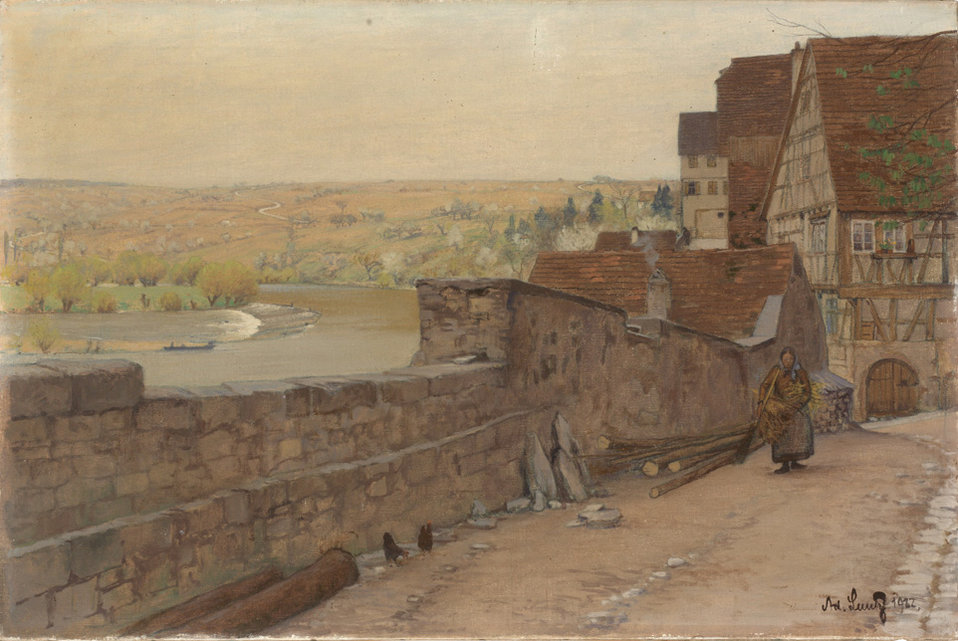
Frühlingsmorgen am Neckar. Datiert 1922. Öl/Lwd. 62 x 93 cm